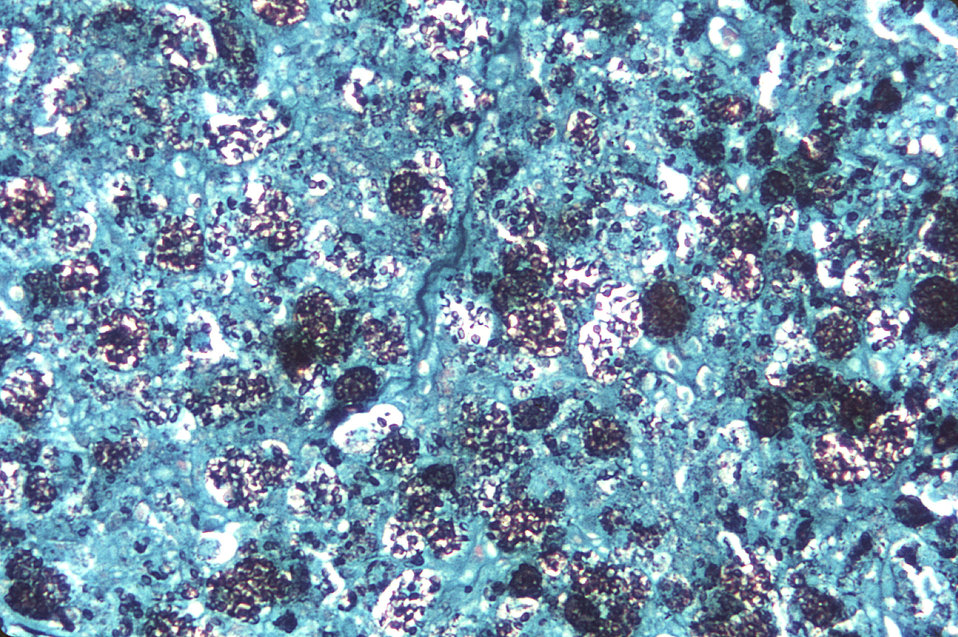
Magnified 300X, this photomicrograph revealed the presence of Histoplasma capsulatum var. duboisii fungal organisms in an unidentified tissue sample.